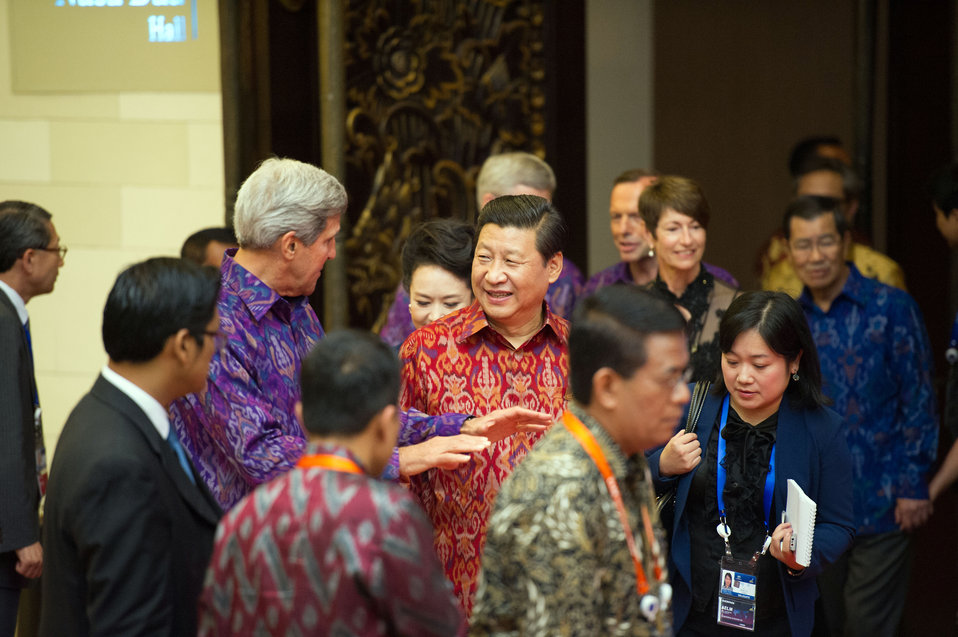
Secretary Kerry Speaks With Chinese President Xi

U.S. Secretary of State John Kerry speaks with Chinese President Xi before the APEC Leaders' Official Dinner in Bali, Indonesia, on October 7, 2013.